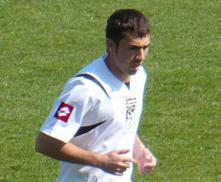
Romanian football player Dacian Varga